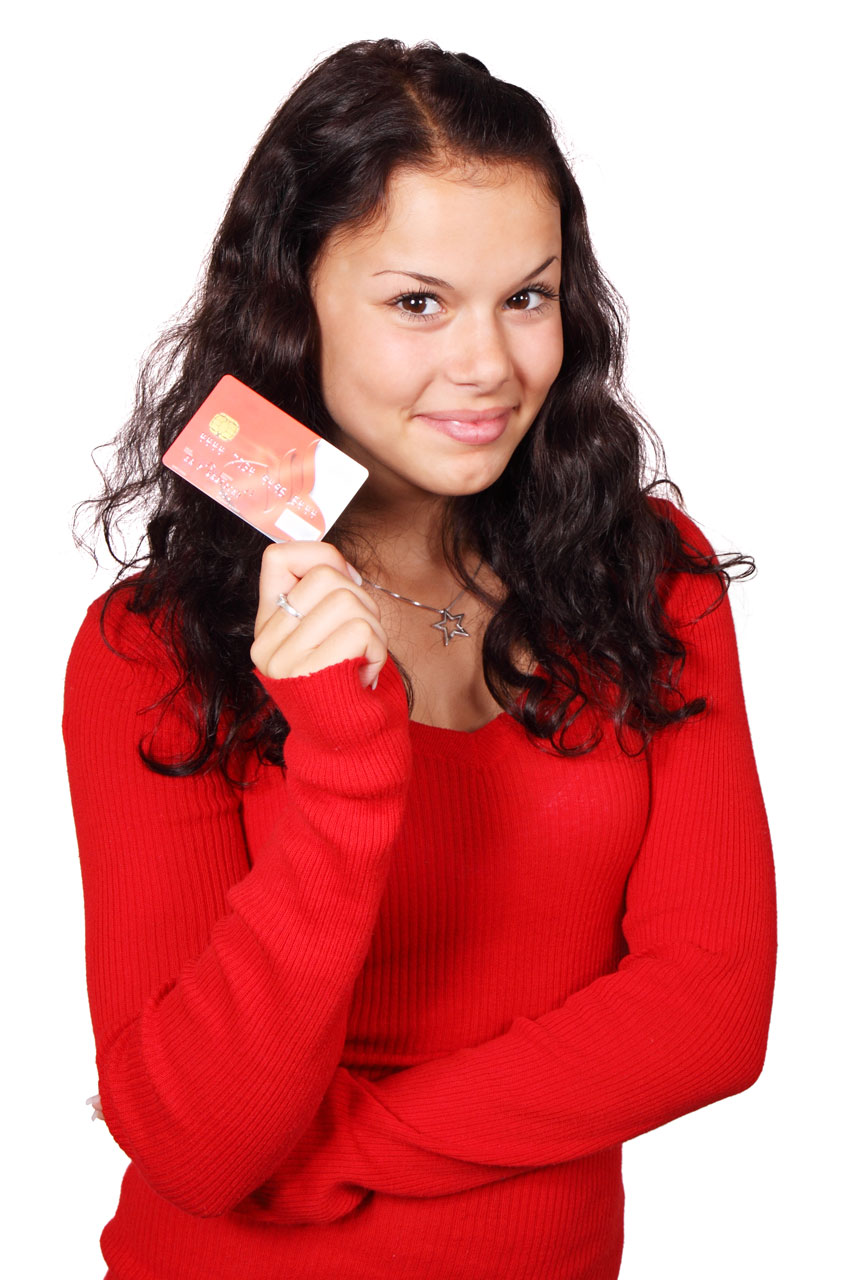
Woman with credit card

Young woman in red with a credit card isolated on white background.